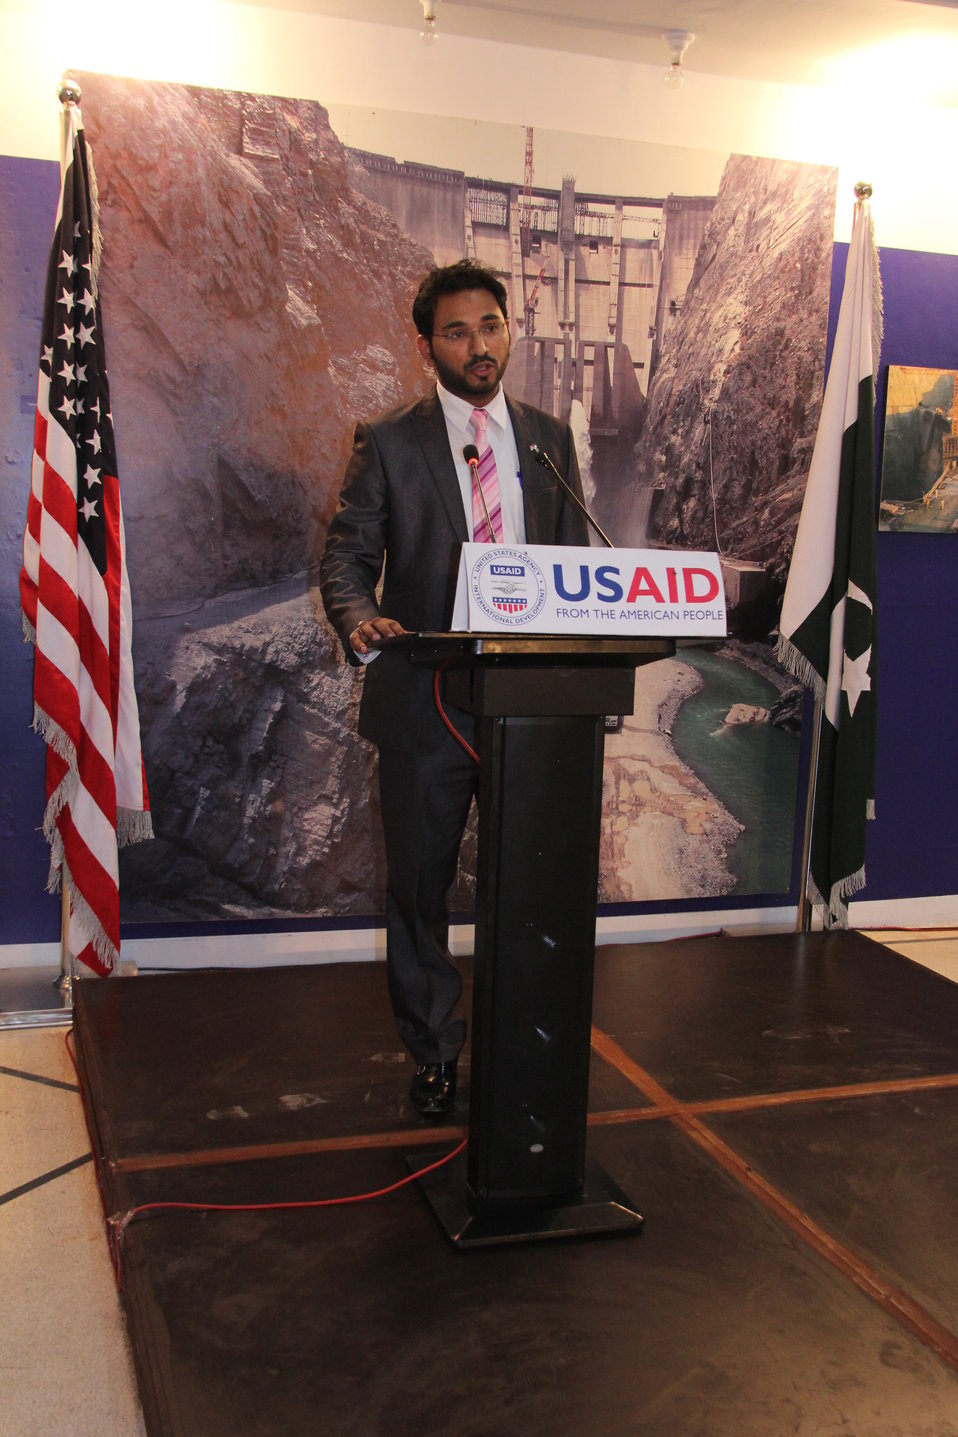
'Since the birth of Pakistan, the United States has been a committed partner of the nation,' remarked Habib-ur-Rehman during the opening of the exhibition.